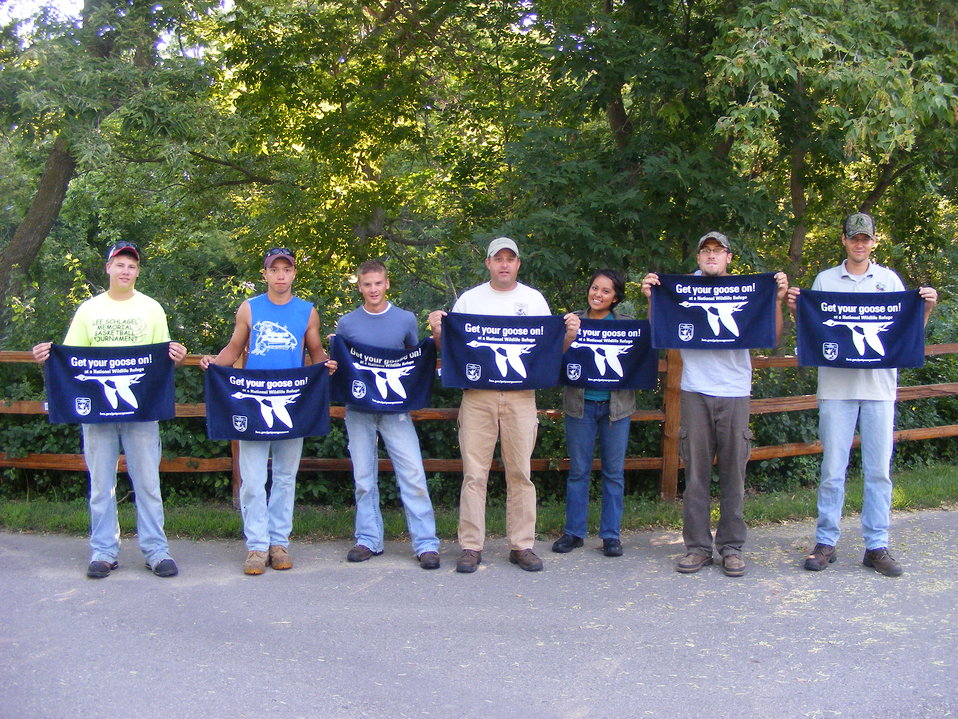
Get Your Goose On!

The Waubay National Wildlife Refuge summer crew poses for the camera.